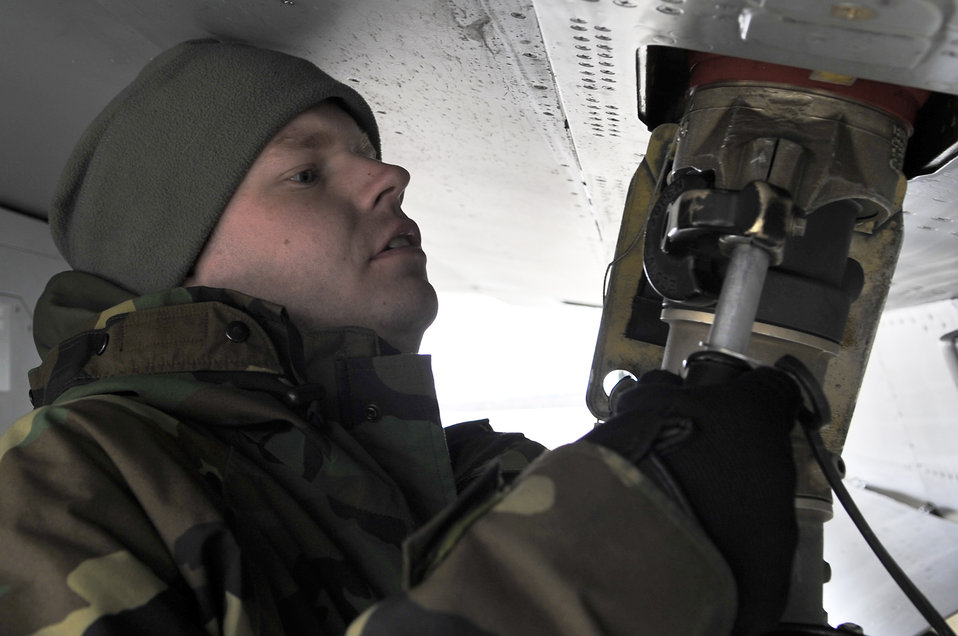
Making it happen: RF-A Maintainers

Staff Sgt. James George prepares to fuel an F-16 Fighting Falcon April 17 during Red Flag-Alaska at Eielson Air Force Base, Alaska. Red Flag-Alaska is a Pacific Air Forces-directed field training exercise for U.S. and coalition forces who fly under simulated air-combat conditions. Sergeant George is a crew chief from the Iowa Air National Guard's 132nd Fighter Wing from Des Moines.